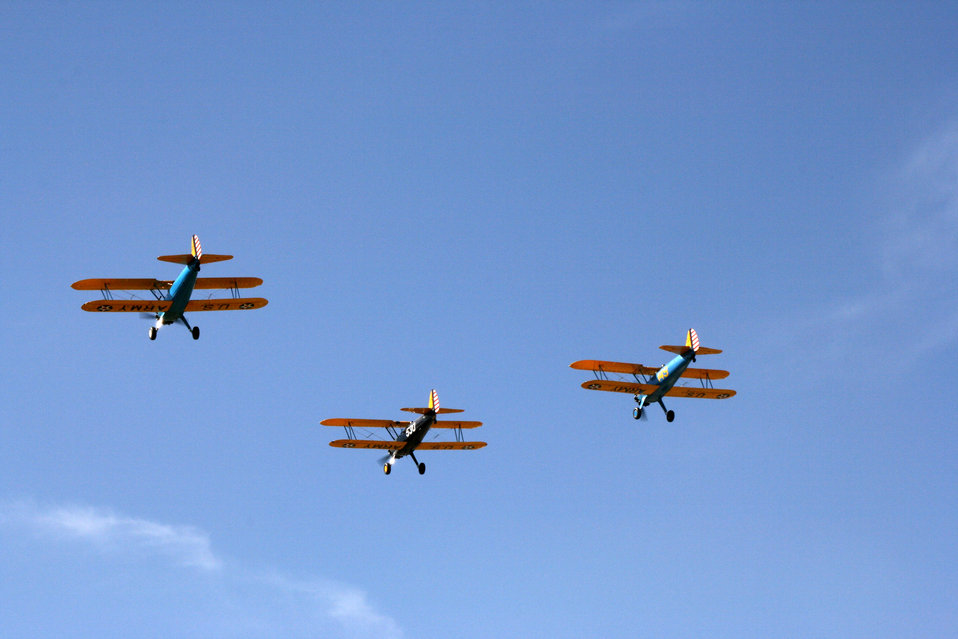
Fort Sam commemorates first military flight

Bryan Cooke, lead, Mickey Chadwell and Jim Edell fly their vintage Stearman aircraft March 2 over the main parade ground at Ft. Sam Houston, Texas, site of the first military aerial flight 97 years ago. The flyover was part of a commemoration held to celebrate that first flight.